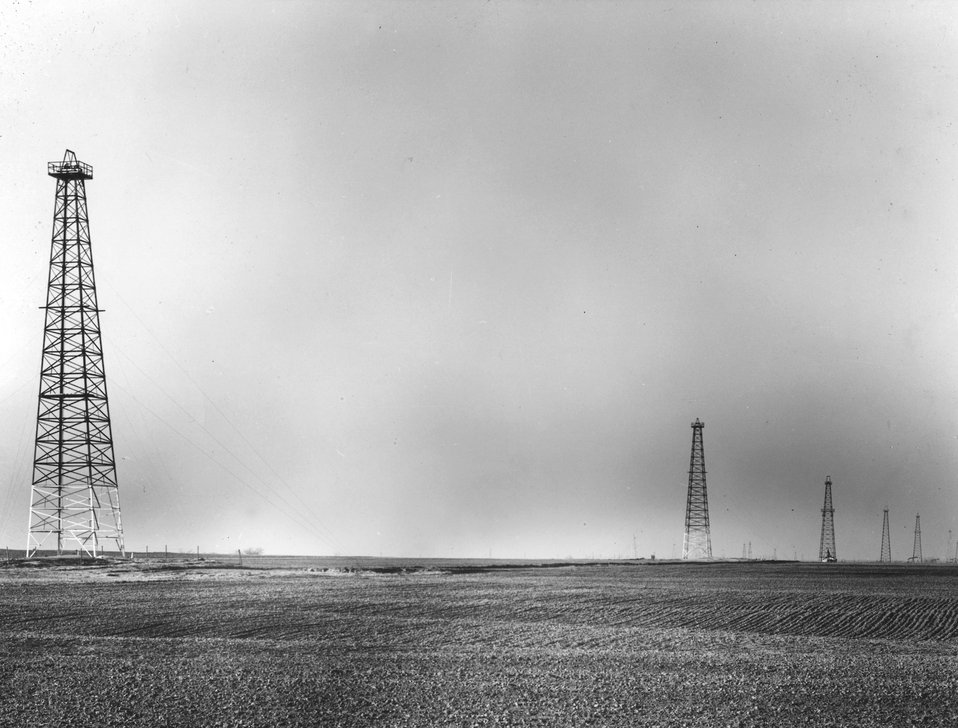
West Edmond, Oklahoma. Standard Oil wells drilled on a forty-acre spacing plan. c. undated